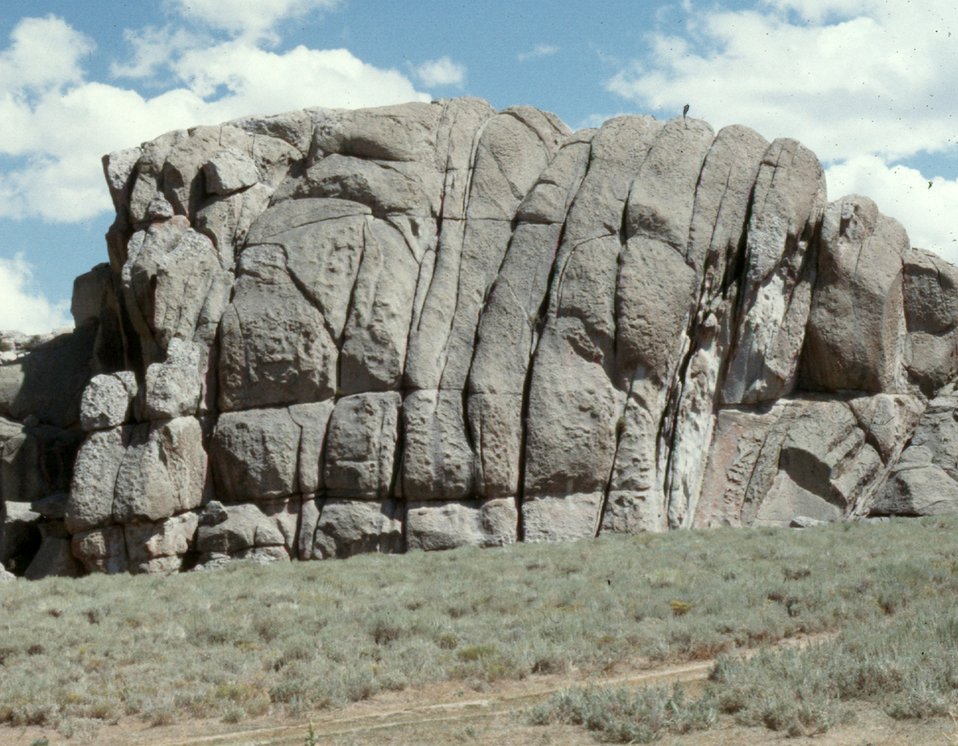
Fractions in Silent City Burley Field Office USRD Upper Snake River District